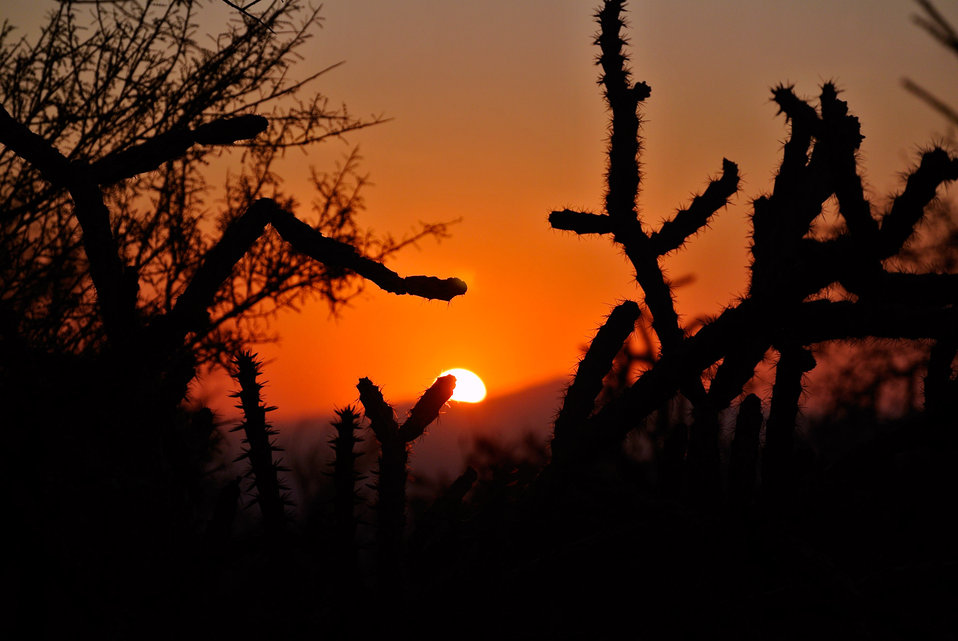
Cactus sunrise.